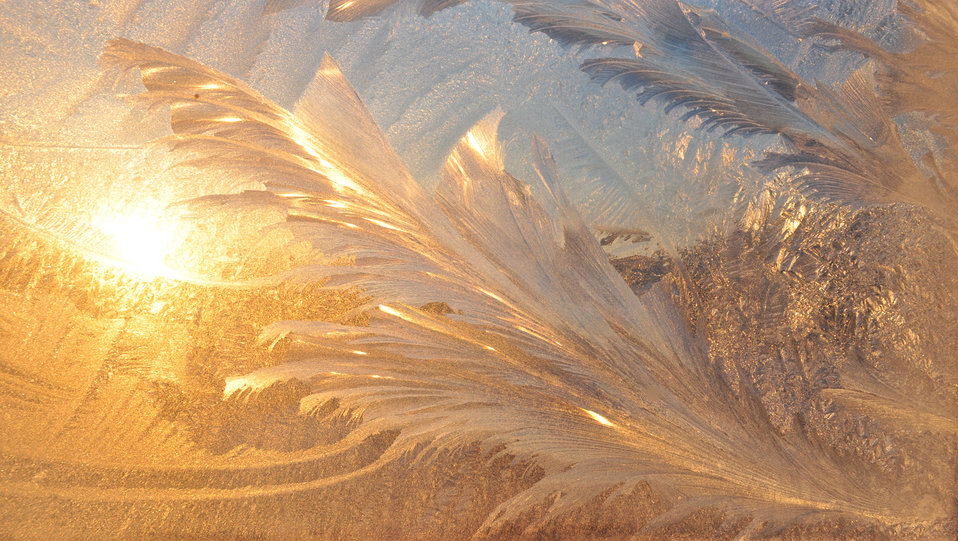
Frost on window.